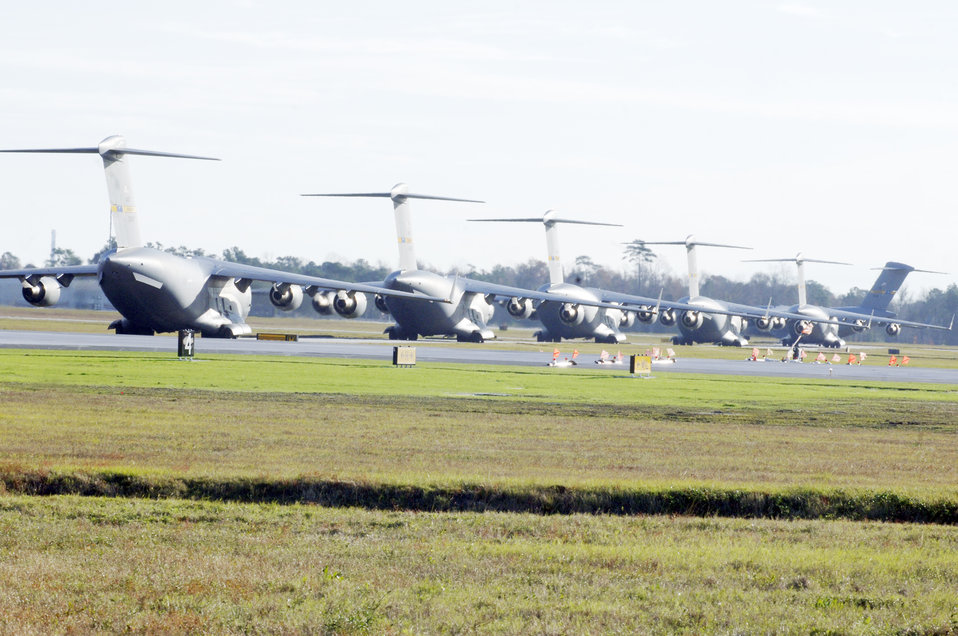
Airmen, Soldiers participate in Operation Thunderstruck

C-17 Globemaster IIIs from Charleston Air Force Base, S.C., line up for take-off in preparation for a strategic brigade airdrop exercise over North Auxiliary Airfield Dec. 16, 2009, near North, S.C. Charleston AFB Airmen conducted a large formation exercise utilizing 10 C-17 aircraft. Soldiers from the 2-319th Airborne Field Artillery, 82nd Airborne Division at Ft. Bragg, N.C., were airdropped along with cargo pallets to simulate the seizure of a remote airfield.